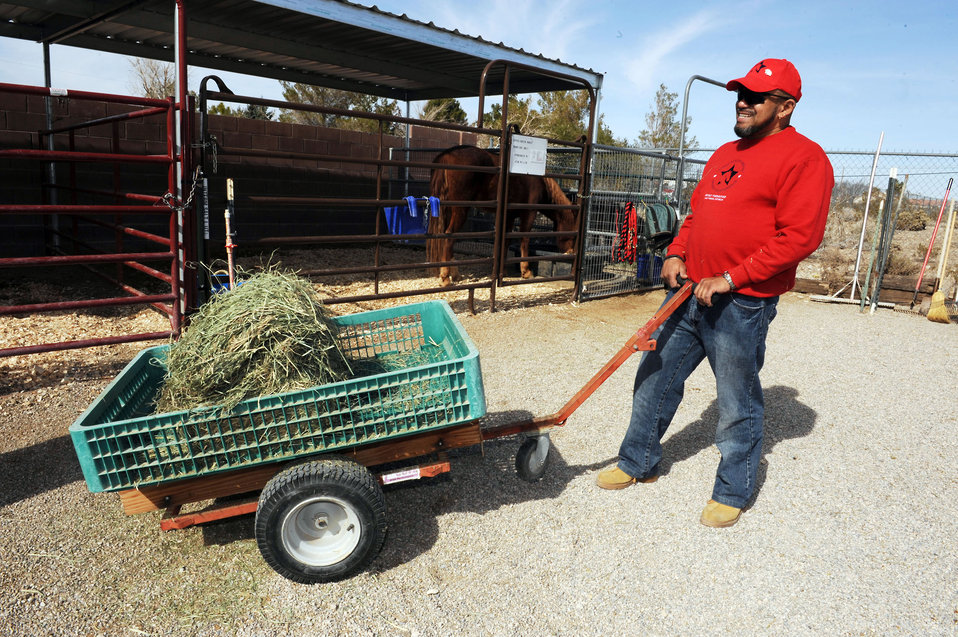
Horses Healing Heroes

Kim Tanner, a retired Army transportation specialist, moves hay at the Spirit Therapies equestrian center in Las Vegas, Nev., as part of the Horses Healing Heroes program. He sustained severe injuries after being struck by an improvised explosive device in Iraq in 2005. The program serves active-duty military and veterans who have been diagnosed with physical and/or mental challenges.